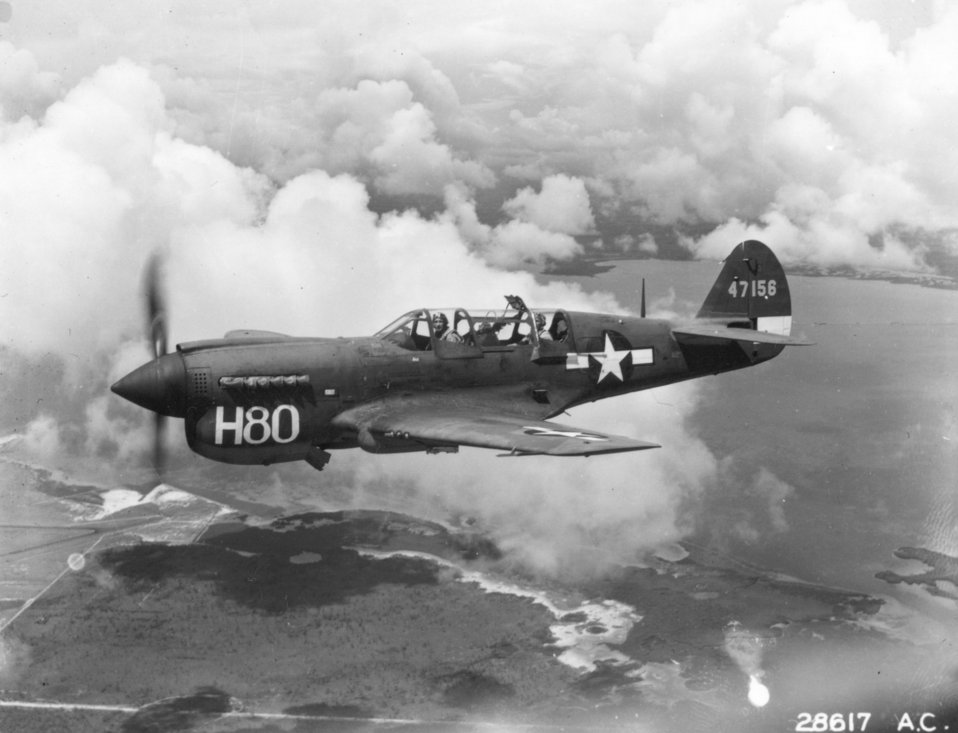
P-40

1940's -- P-40